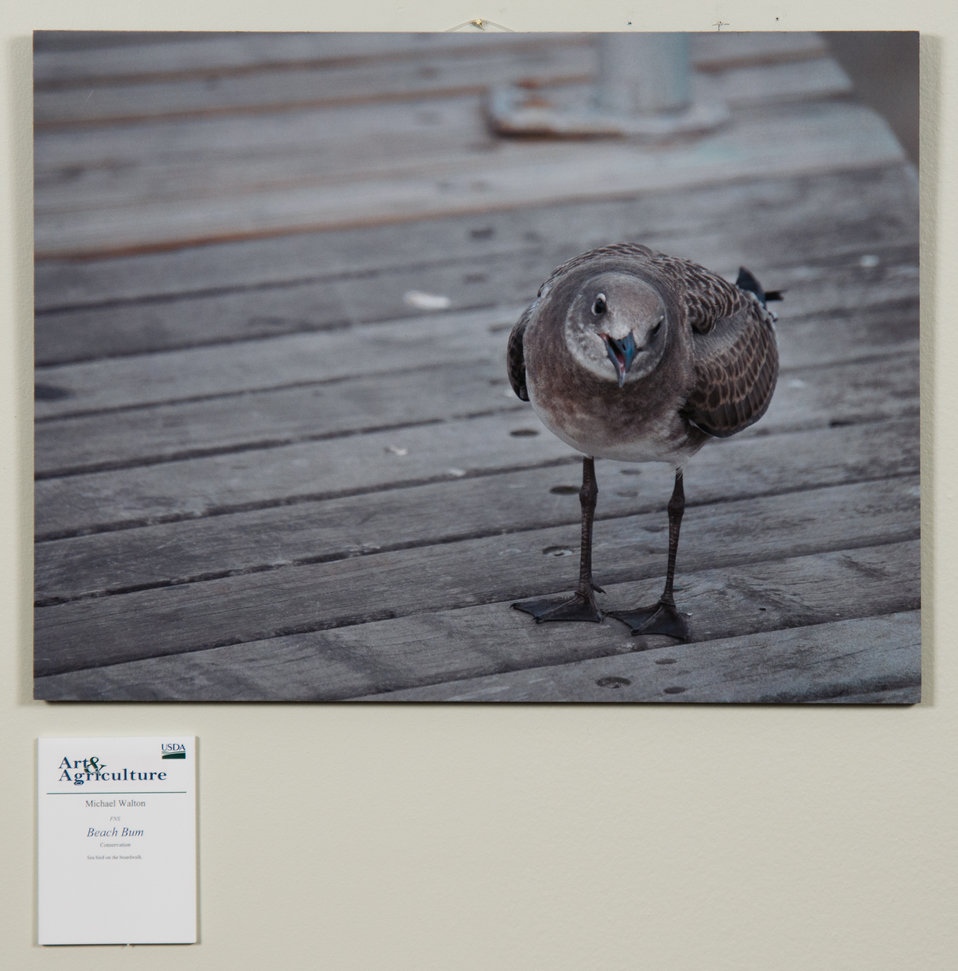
Online Viewer's Choice entries of the 2013 Art & Agriculture, Tuesday, July 9, 2013, in the South Building, Washington, D.C. Themes were expressed by employees from across the department and the contest was open to full-time and part-time USDA employees. Winning artwork will be displayed till the end of the year. U.S. Artistic expression is a creative outlet that is vital for an individual to grow and develop.